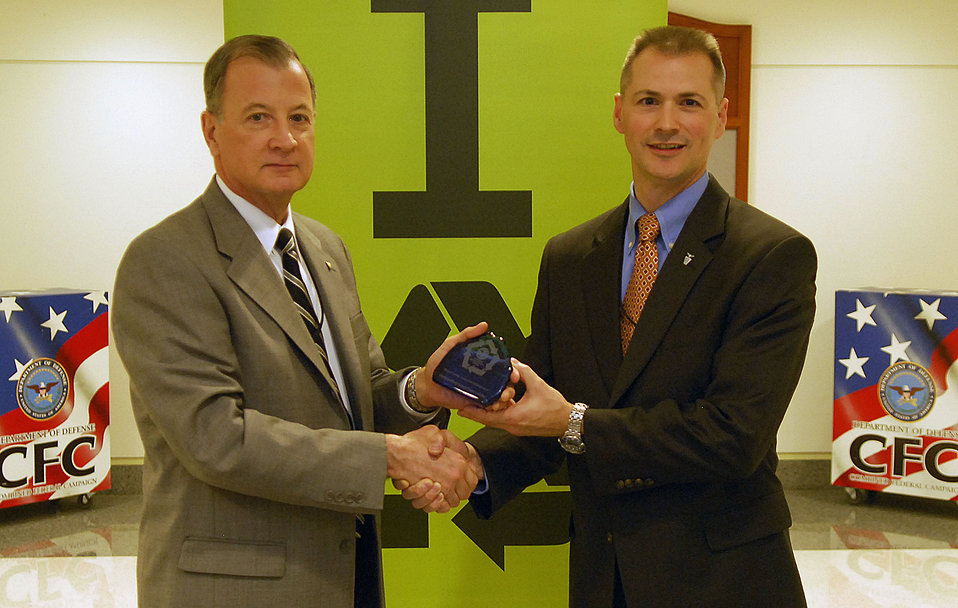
Green Awards

Dr. Kevin Geiss, the deputy assistant secretary of the Air Force for energy, accepted the Pentagon's Green Award on behalf of the Air Force Energy Office from the Pentagon's Director of Facilities Bradley Provancha during the Pentagon’s